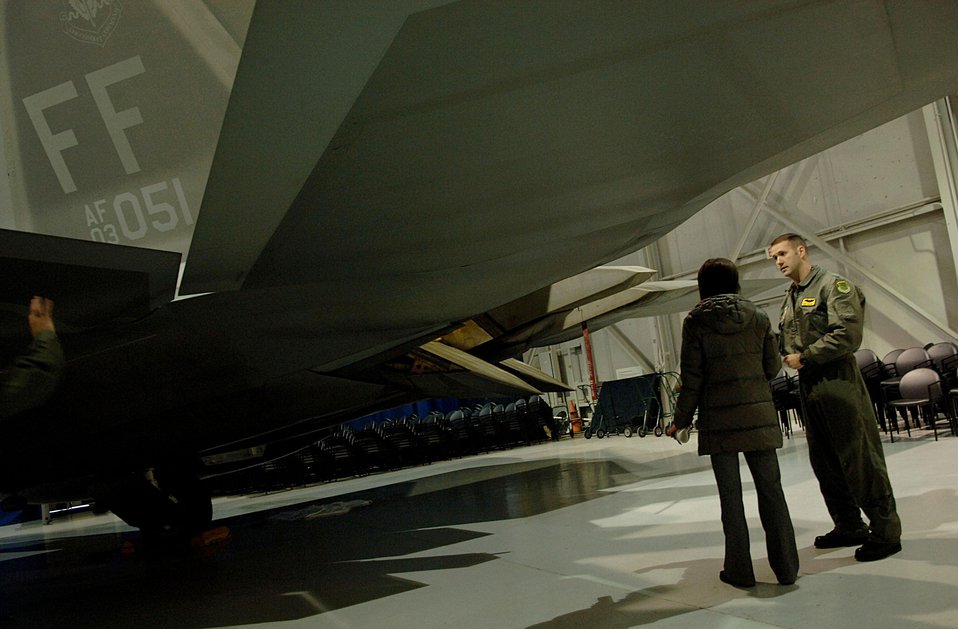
Raptor showcased for Japanese

Capt. Phil Colomy explains F-22 Raptor capabilities to reporter Aya Igarashi during a press conference Jan. 31 at Langley Air Force Base, Va. Captain Colomy is an F-22 pilot with the 27th Fighter Squadron.